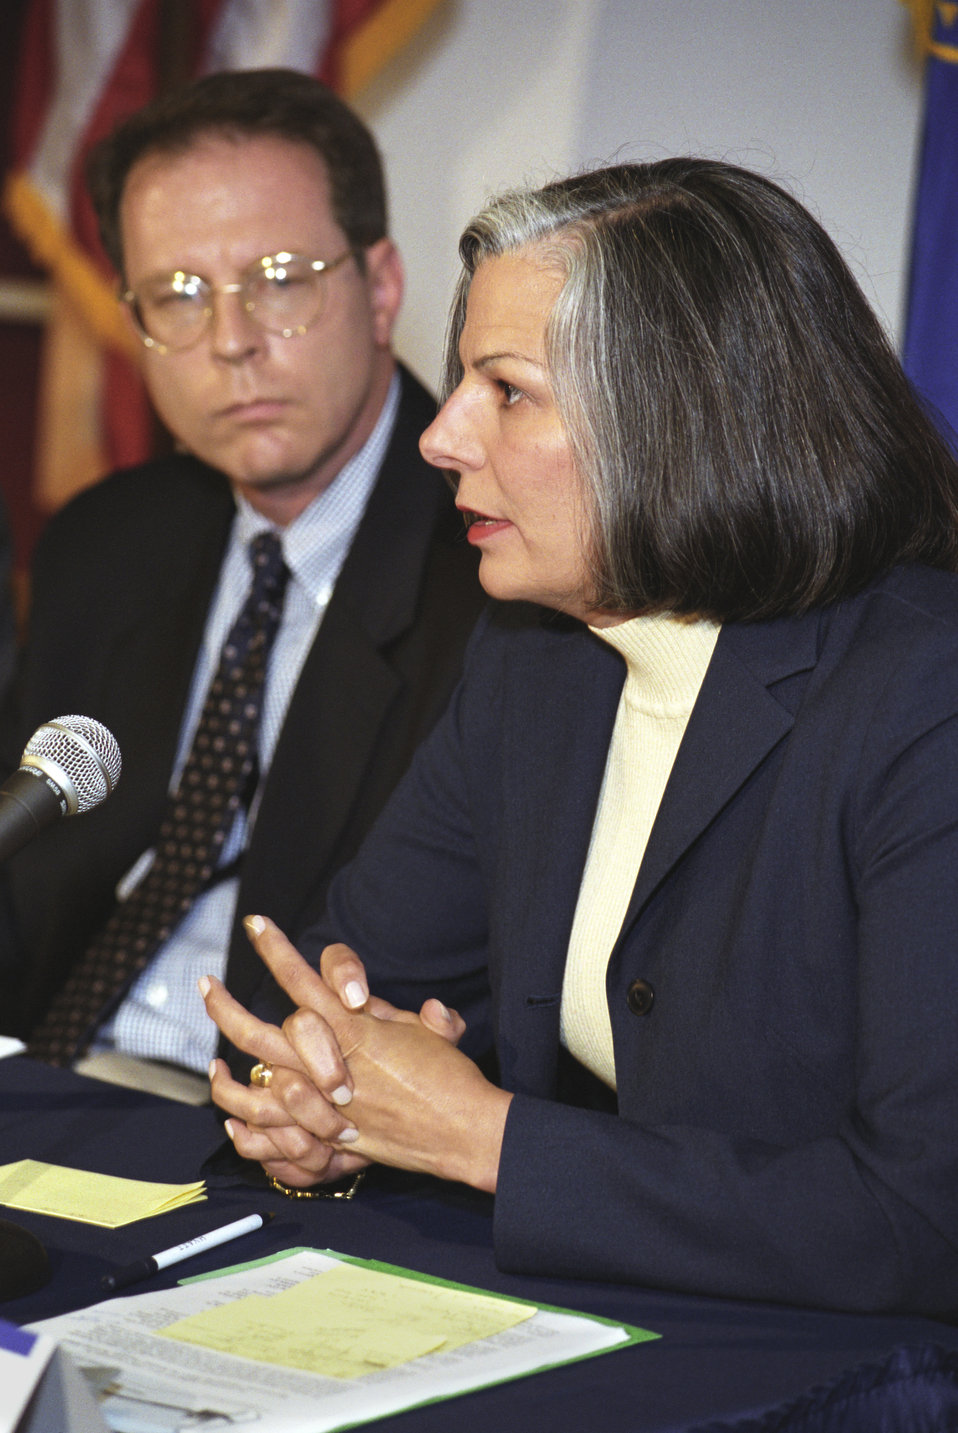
Centers for Disease Control and Prevention Bioterrorism Preparedness Press Briefing, August 27, 2002.